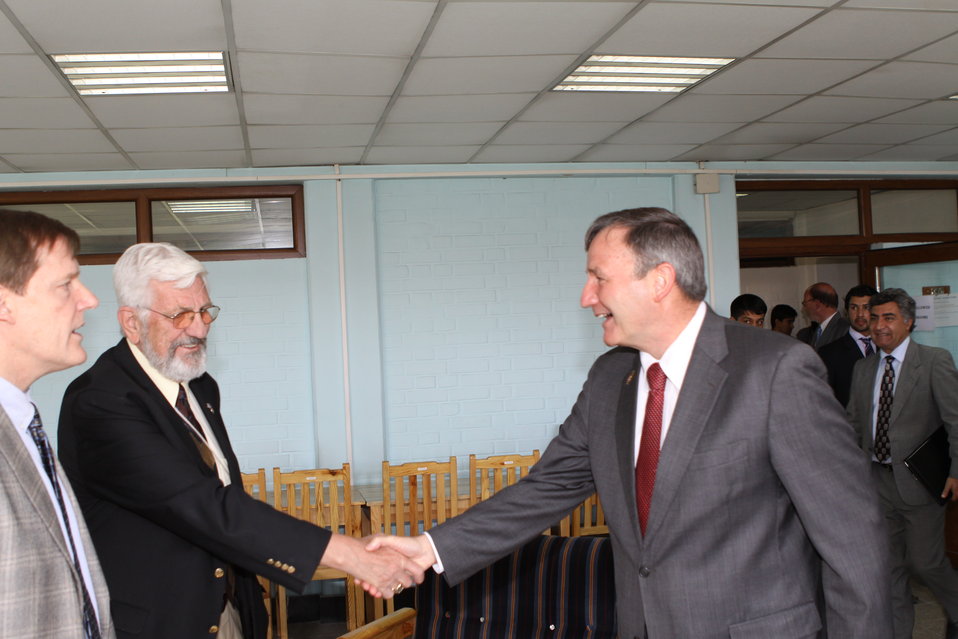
100526 AUAF Graduation 029